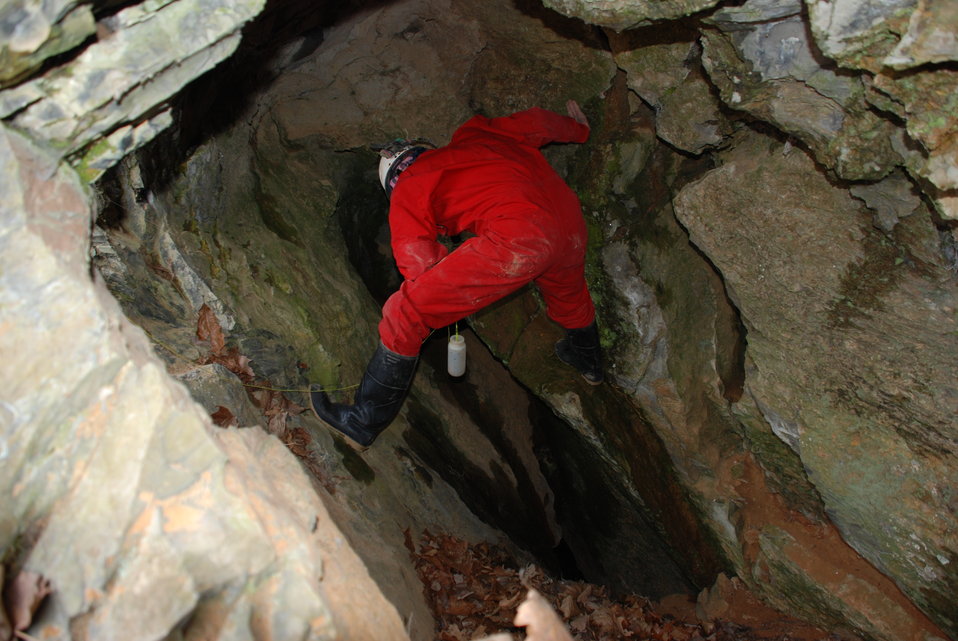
Placing bait used to survey for Madison Cave isopods

Placing the shrimp bait to survey Madison Cave isopods.